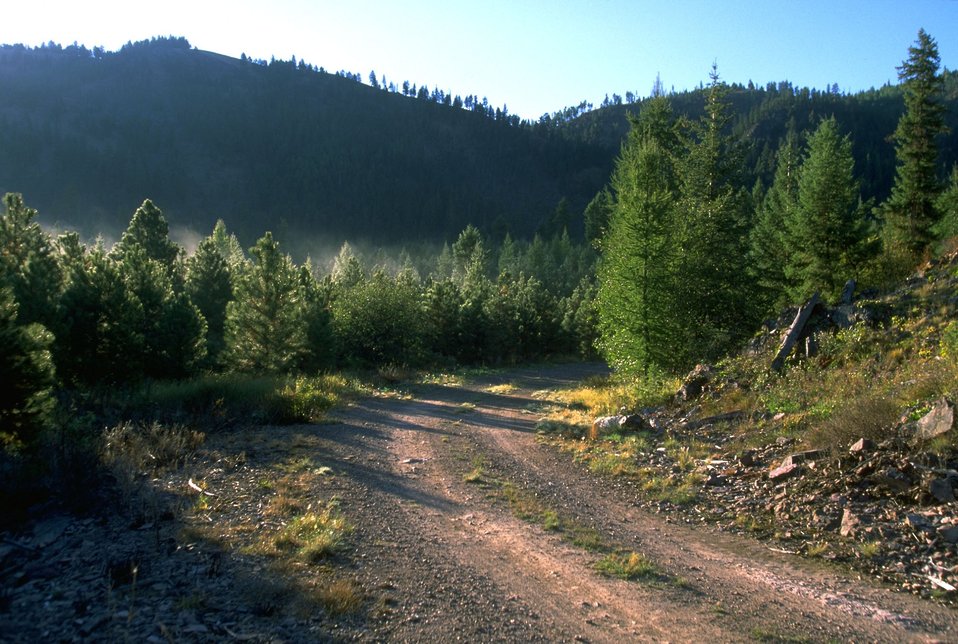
Road to the Buffalo trail along the Blackfoot River